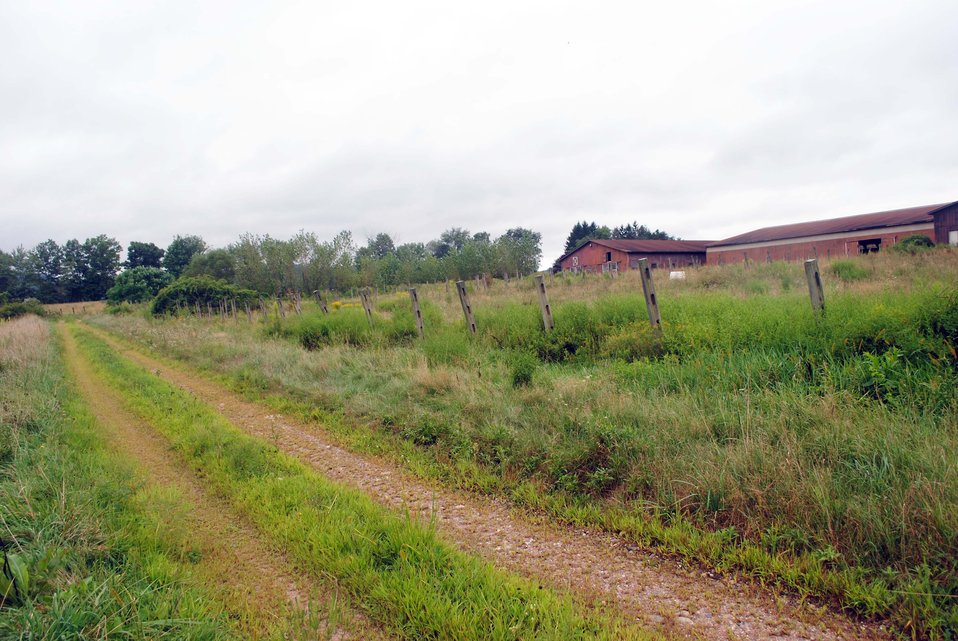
Fort River Division

An abandoned horse racing track at the Fort River Division of the Silvio O. Conte National Wildlife Refuge, Hadley, MA.